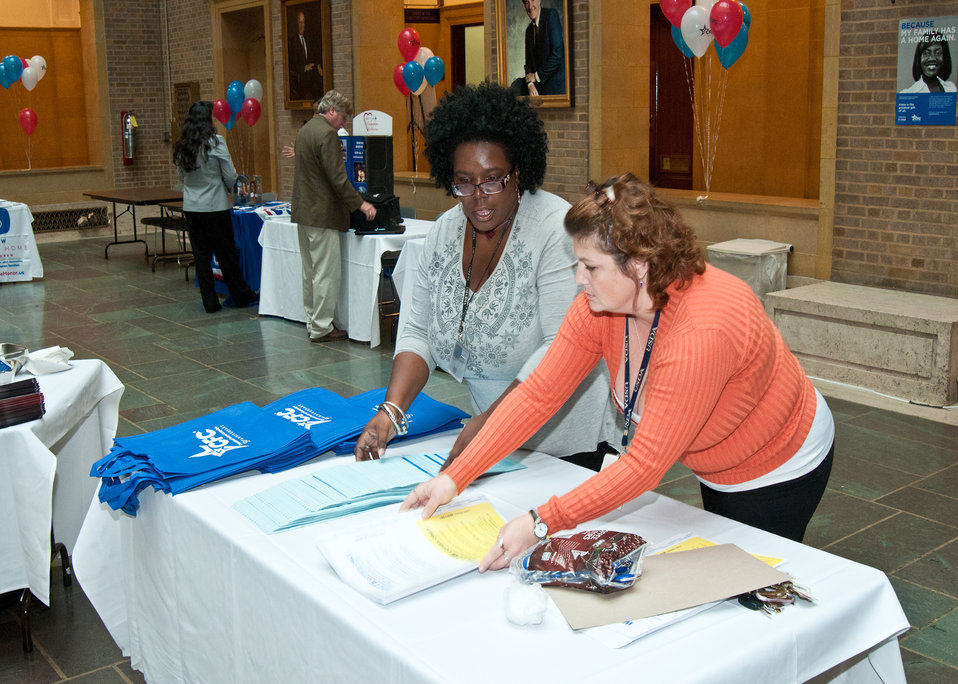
Tammy Jackson (left) and Rebecca Engle, of Risk Management Agency prepare a table with catalogs and donation forms at the kick-off of the USDA 2011 Combined Federal Campaign “Compassion of Individuals, Power of Community” at the USDA in Washington, DC, on Wednesday, September 21, 2011. The theme of the 2011 campaign is “Celebrating 50 Years of Caring, Serving and Giving.”